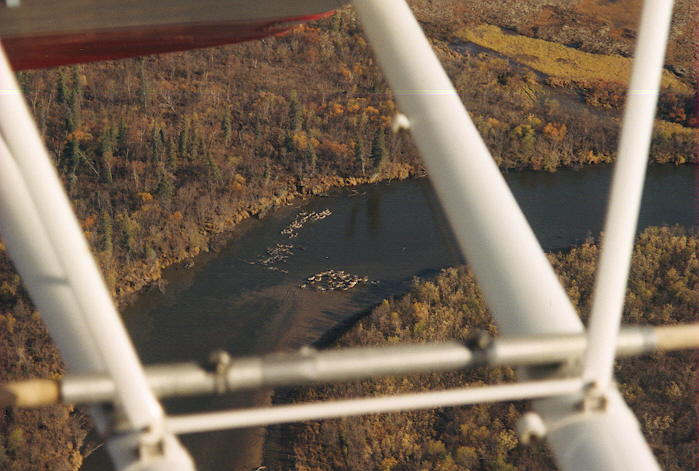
Caribou Crossing Kwethluk River

USFWS Yukon Delta NWR